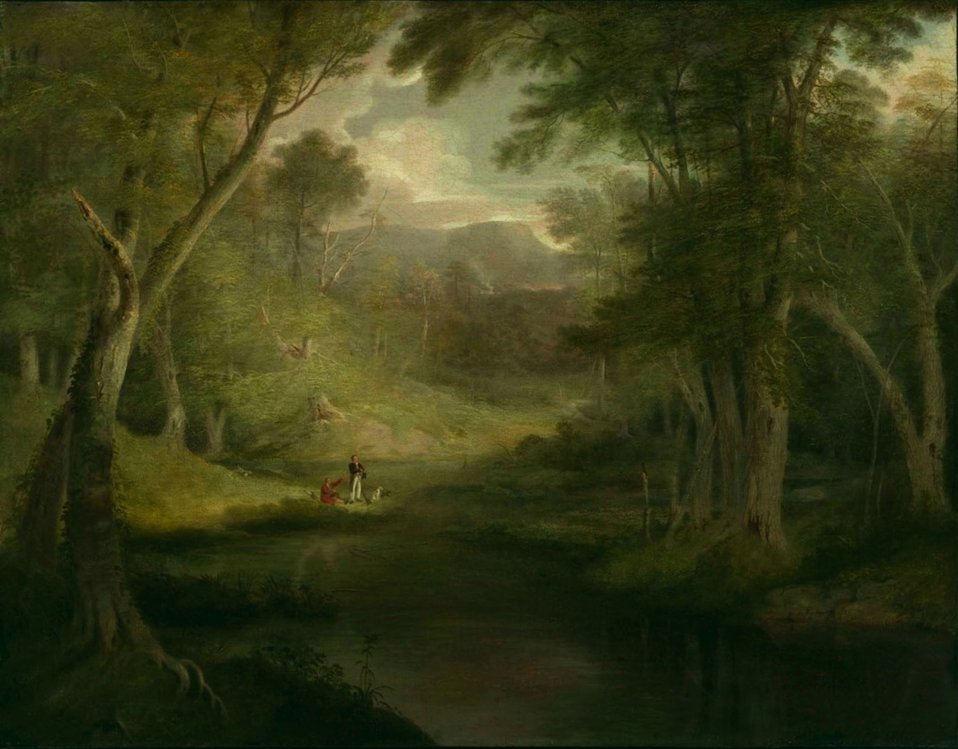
Alvan Fisher - Sugar Loaf Mountain